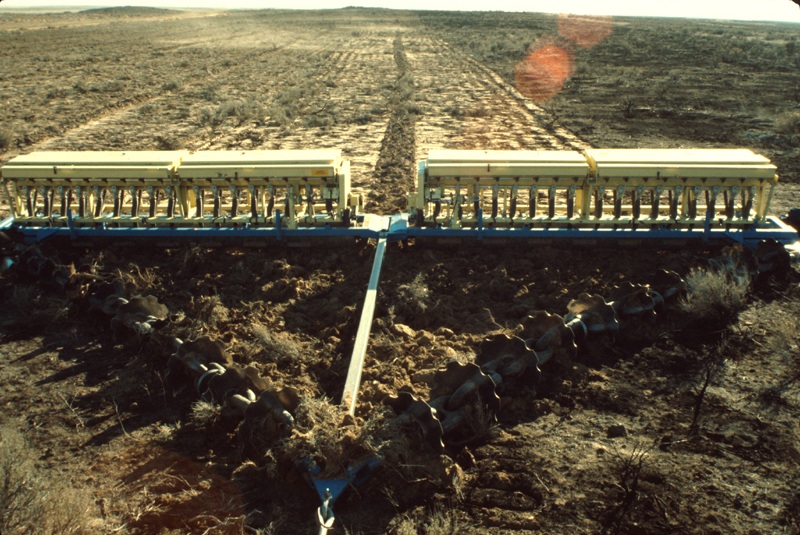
Disk chain Range Restoration Project Lower Snake River District